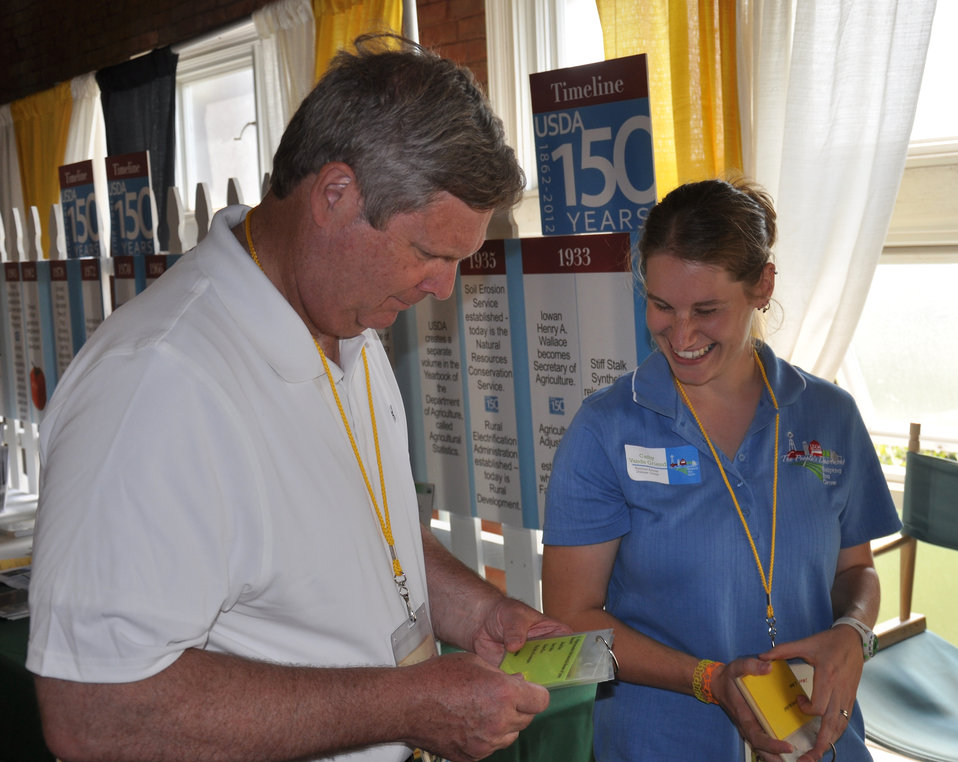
Agriculture Secretary Tom Vilsack talks with Cathy Vane Griend of the National Animal Disaster Center while touring the Iowa State Fair in Des Moines, Iowa, on Thursday, August 16, 2012.

The Secretary was in Iowa As part of continuing steps by the Obama Administration to assist livestock producers in response to the historic drought. USDA will utilize nearly $16 million in financial and technical assistance to immediately help crop and livestock producers in 19 states to cope with the adverse impacts of the historic drought. In addition, USDA will initiate a transfer of $14 million in unobligated program funds into the Emergency Conservation Program. These funds can be used to assist in moving water to livestock in need, providing emergency forage for livestock, and rehabilitating lands severely impacted by the drought. Together these efforts should provide nearly $30 million to producers struggling with drought conditions.Most recently, Secretary Vilsack signed disaster designations for an additional 44 counties in 12 states including Iowa as primary natural disaster areas due to damage and losses caused by drought and excessive heat.